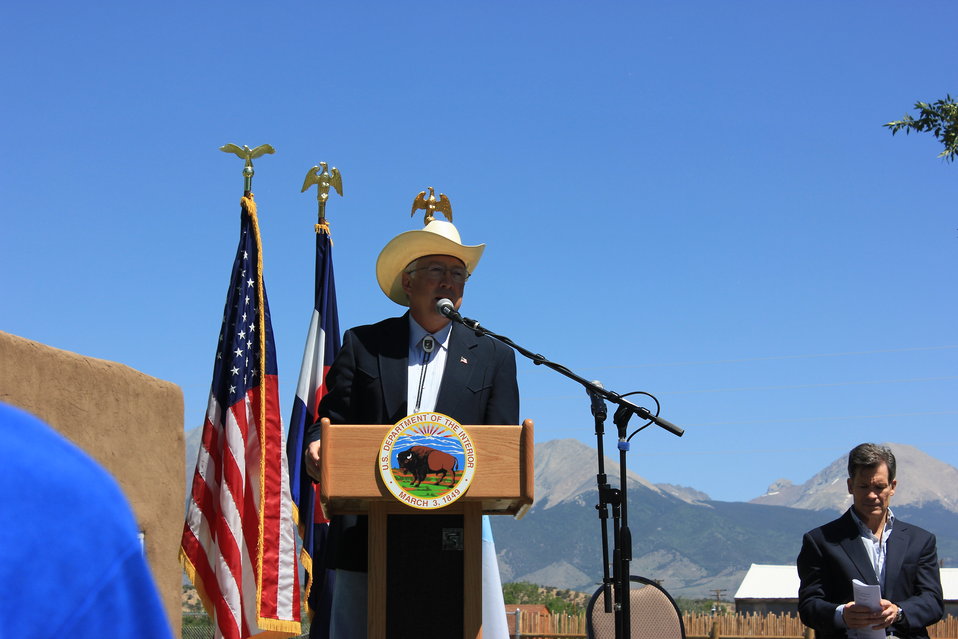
Historic Conservation Easement in Sangre de Cristo Mountains